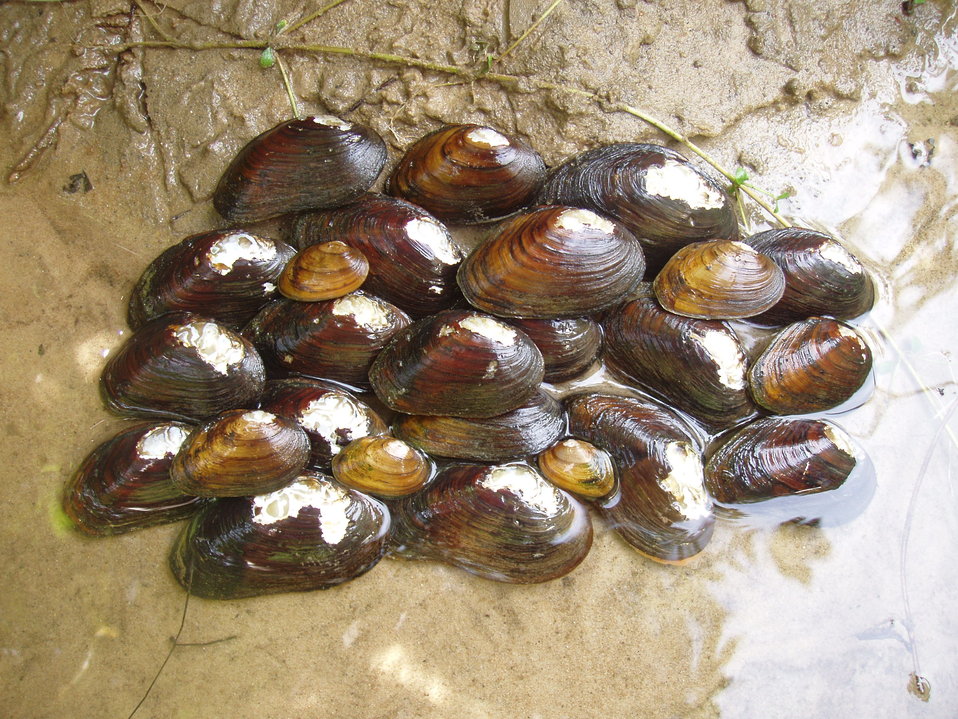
James spinymussel (Pleurobema collina) found during sream survey in Virginia

Mulitple James spinymussels were found during a stream survey in August 2006 in southwestern Virginia.